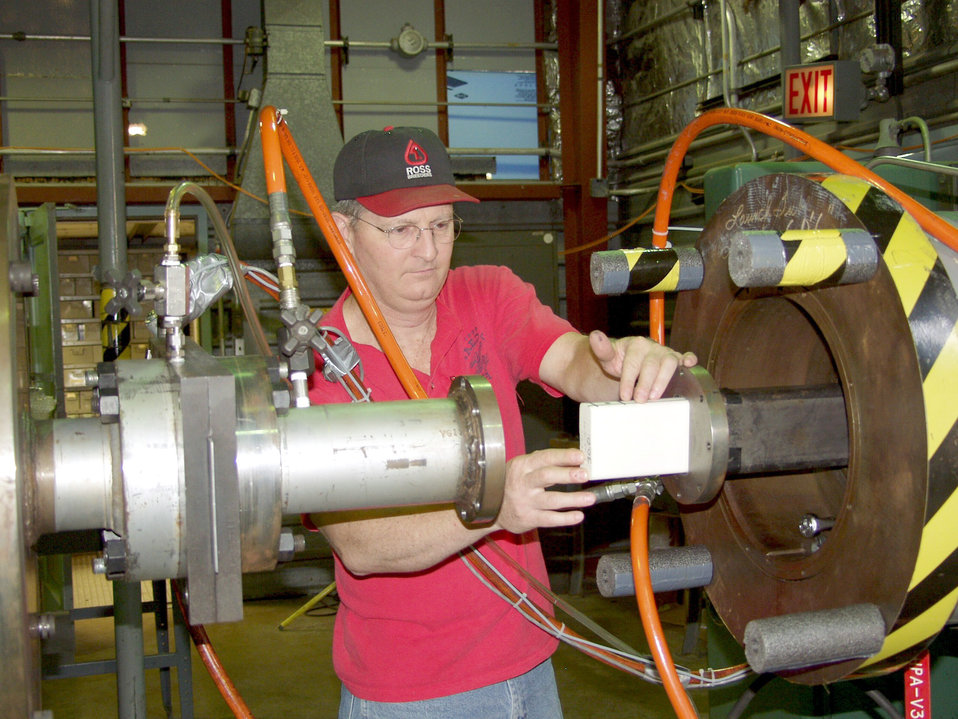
Arnold AFB linked to space shuttle return-to-flight program

ARNOLD AIR FORCE BASE, Tenn. -- Machinist Larry Phipps loads a foam projectile into an 86-foot-long rectangular barrel used to conduct impact testing for the space shuttle return-to-flight program at the Arnold Engineering Development Center here.